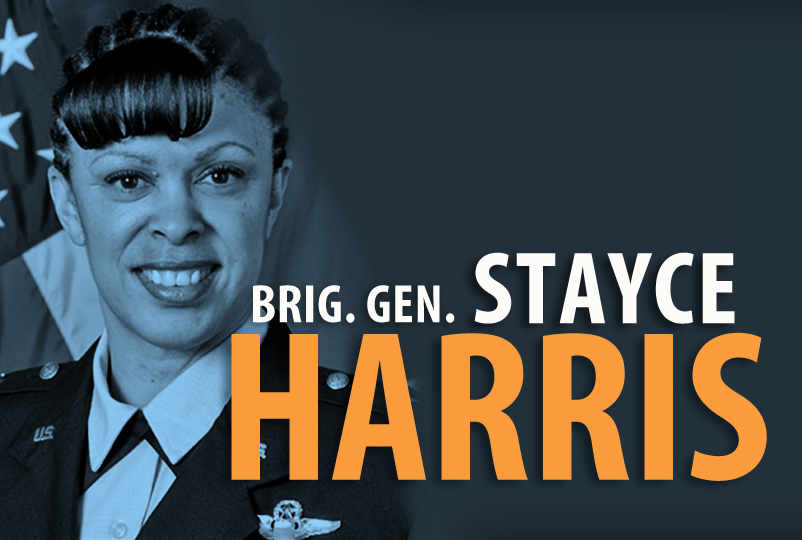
Brig. Gen. Stayce Harris